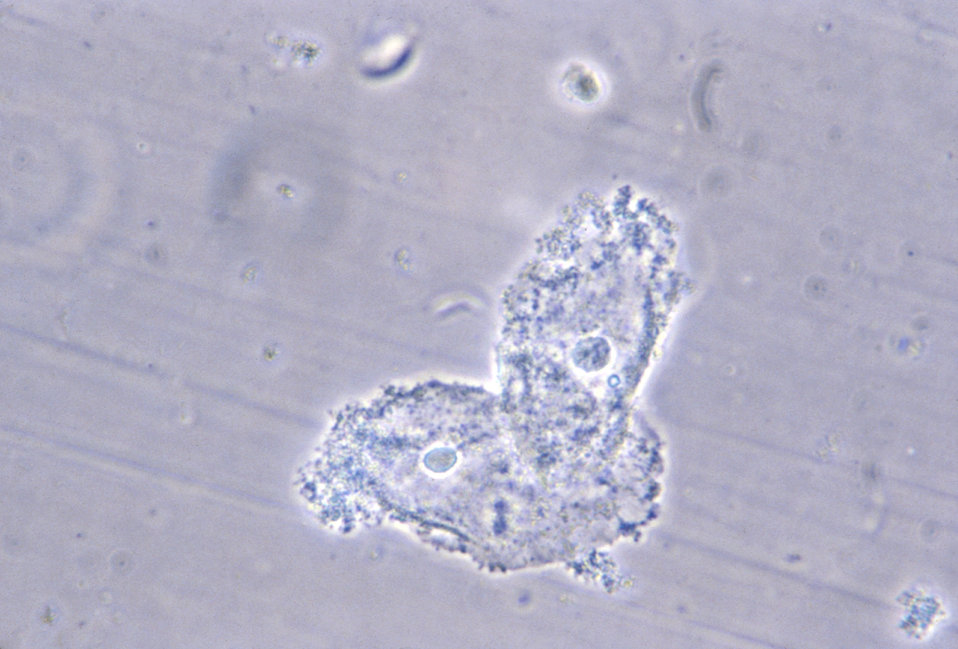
This photomicrograph reveals bacteria adhering to vaginal epithelial cells known as 'clue cells'.